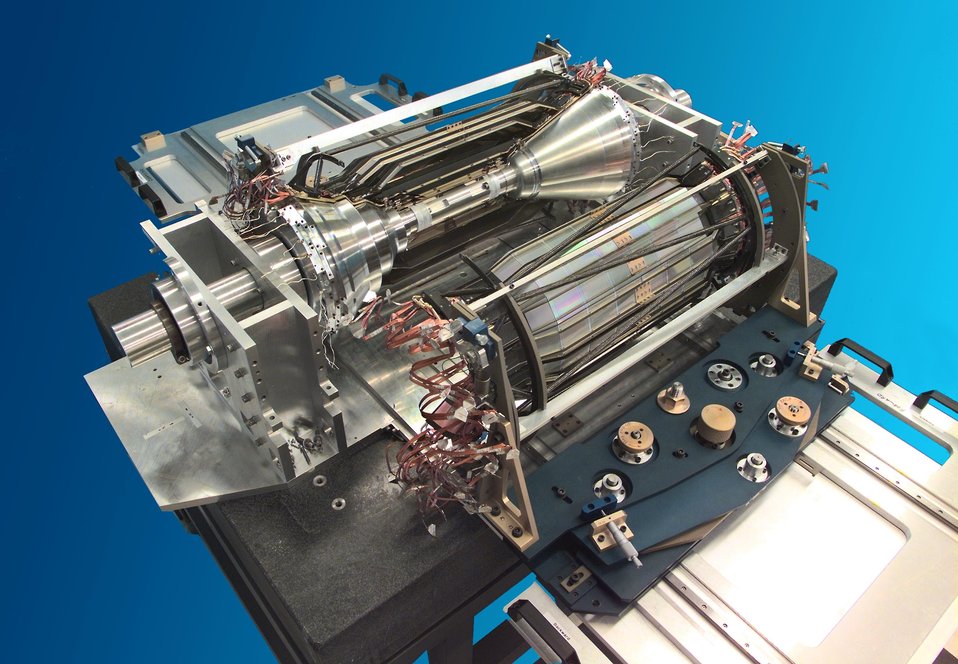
SILICON OF THE BABAR DETECTOR AT THE STANFORD LINEAR ACCELERATOR CENTER.

BABAR IS A 1200 TON DETECTOR SYSTEM THAT CAN SIFT THROUGH THE 238 MILLION BEAM CROSSINGS THAT WILL OCCUR EVERY SECOND IN THE B-FACTORY AND ANALYZE THE THREE TO FOUR EVENTS THAT CAN BEST BE STUDIED FOR CP VIOLATION (CHARGE-CONJUGATION/PARITY). THE BABAR DETECTOR SYSTEM AFFORDS SCIENTISTS FROM LBNL, LLNL AND SLAC THE OPPORTUNITY TO STUDY THE DIFFERENCE BETWEEN MATTER AND ANTIMATTER AND PLAYS A LARGE ROLE IN THE UNDERSTANDING OF NATURE AND MATTER.